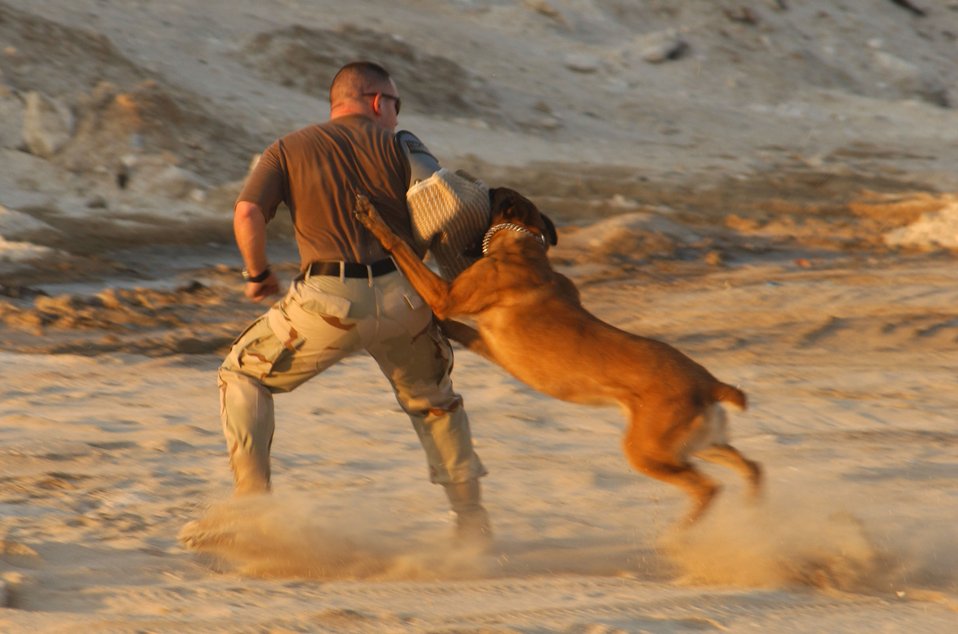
Stand perfectly still...

Senior Airman Alexander Colon is searched by Tech. Sgt. Keith Crowder while Endy stands by to assist during a military working dog demonstration Oct. 21. Airman Colon, Sergeant Crowder and Endy are assigned to the 380th Expeditionary Security Forces Squadron at this deployed location in Southwest Asia where working dog teams provide security for the largest air refueling fleet in the theater.